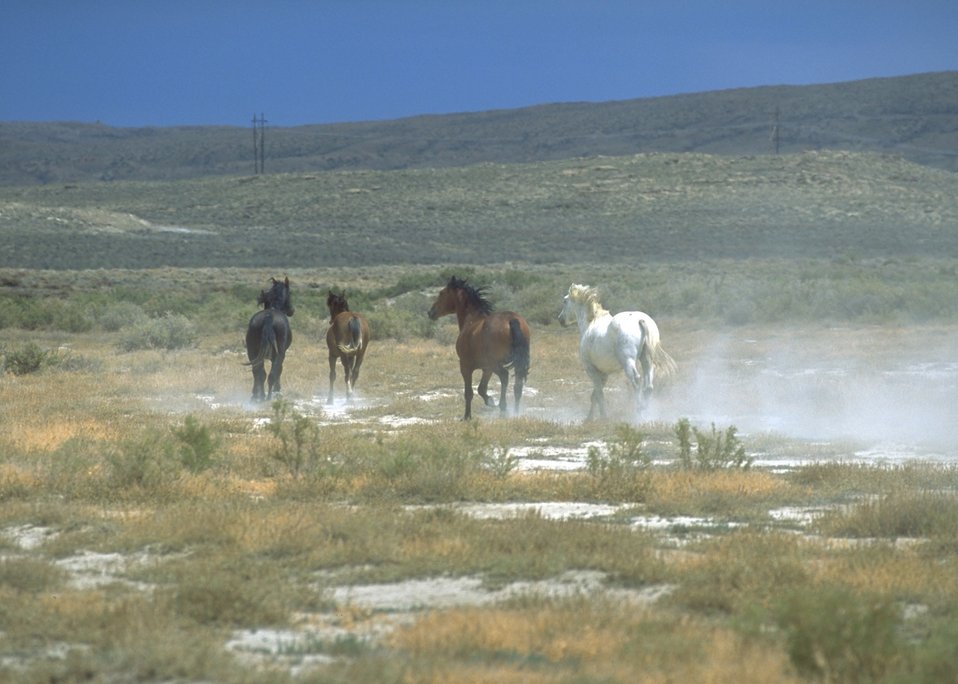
Wild horses, Rock Springs Field Office.